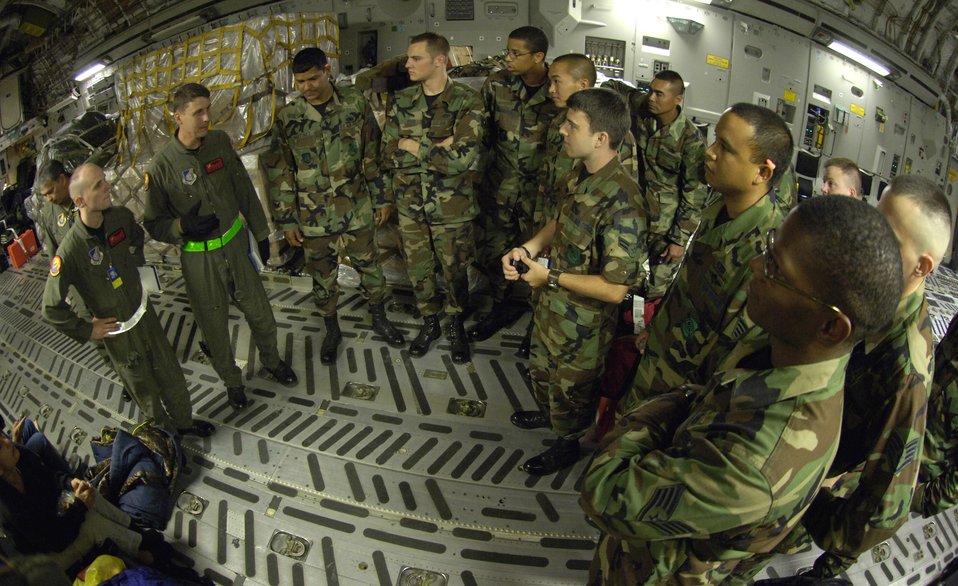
Relief mission

HICKAM AIR FORCE BASE, Hawaii (AFPN) -- Tech. Sgt. Ken Bragg and Staff Sgt. Ryan Page give a safety briefing aboard a C-17 Globemaster III to members of the 15th Airlift Wing before a mission to the Philippines. The 535th Airlift Squadron and the 204th Airlift Squadron conducted the first contingency response mission to support relief efforts in the Philippines. Both sergeants are with the 535th Airlift Squadron.